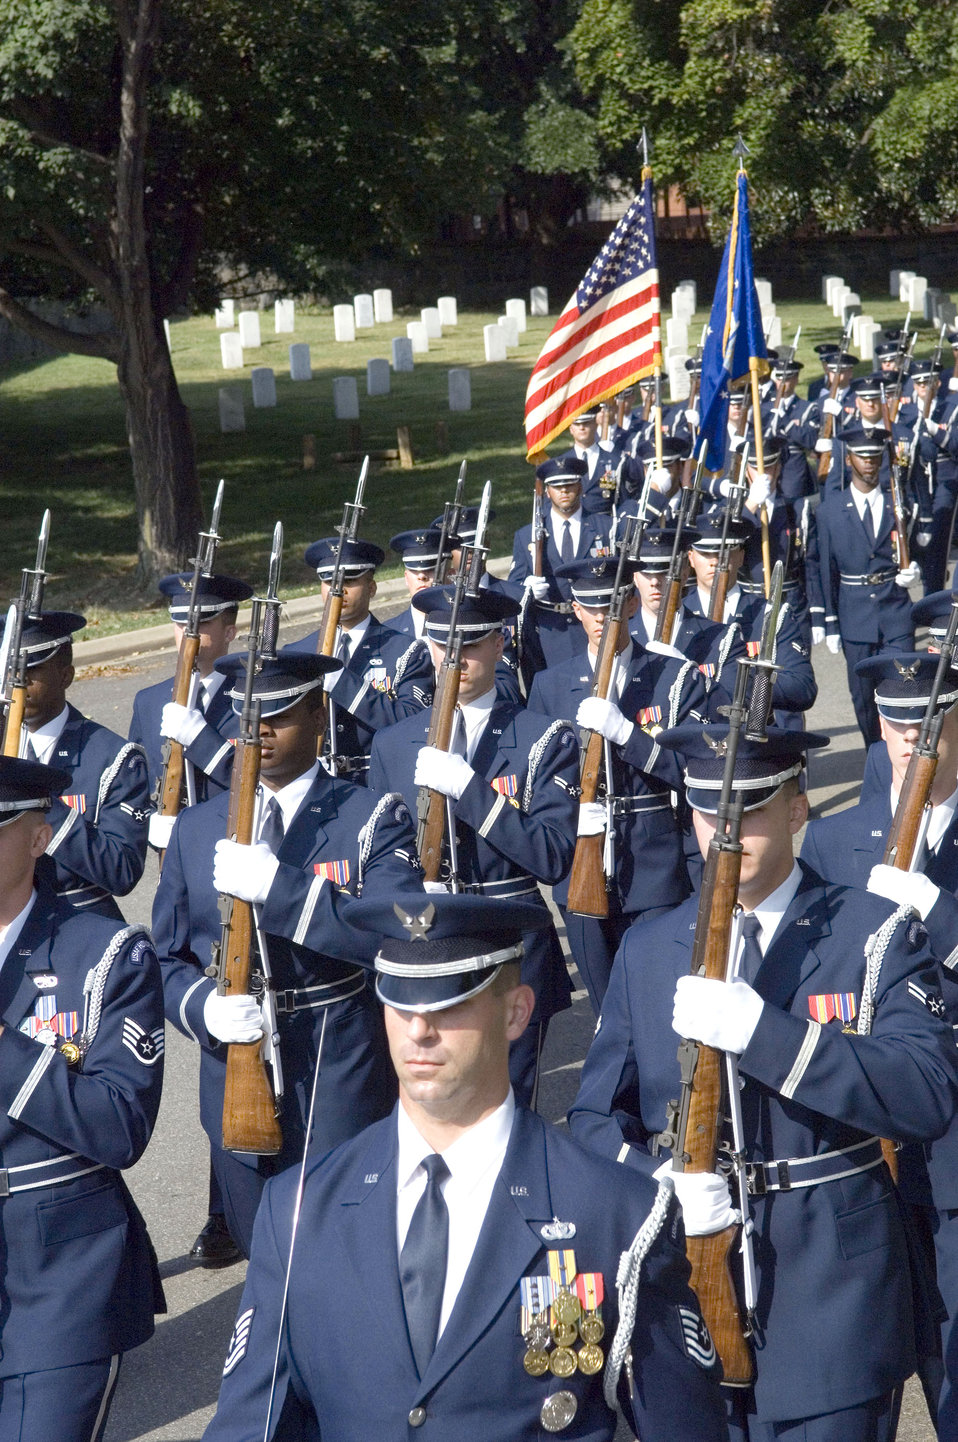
Military pays tribute to World War II bomber pilot

The U.S. Air Force Honor Guard marches in the funeral procession for retired Maj. Gen. Jack I. Posner at Arlington National Cemetery on Aug. 11. General Posner was among the last bomber pilots to have served in World War II.